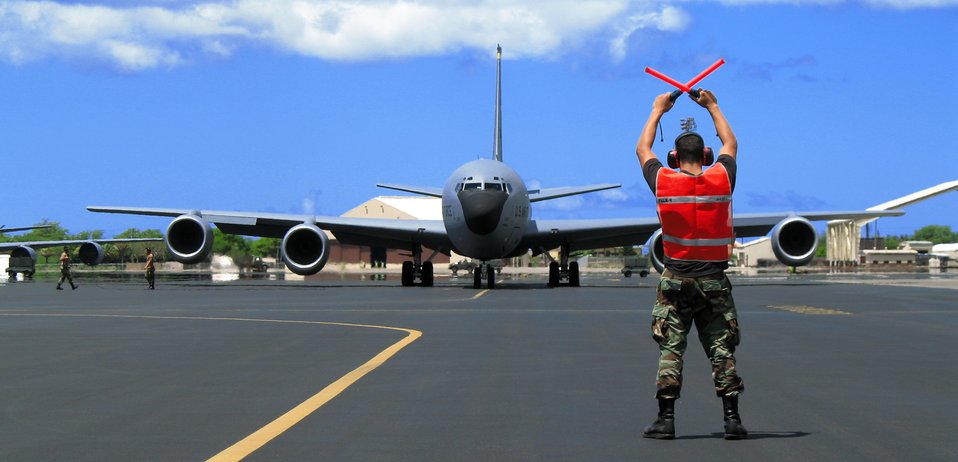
KC-135: 50 years old and still refueling

Staff Sgt. Kristian Miraflor marshals a KC-135 Stratotanker for takeoff from Hickam Air Force Base, Hawaii, on Thursday, July 27. Sergeant Miraflor is assigned to the Hawaii Air National Guard's 154th Aircraft Maintenance Squadron.